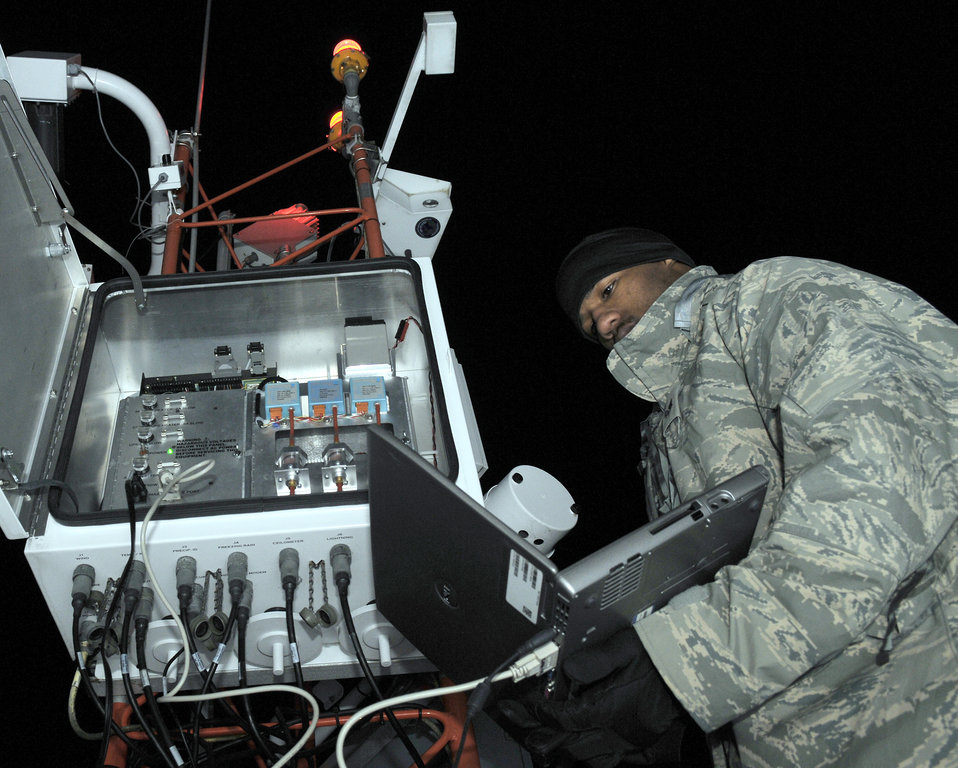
Testing 1-2-3

Senior Airman Kai Hall runs a diagnostic test on meteorological equipment Jan. 20, 2011, at Misawa Air Base, Japan. Airman Hall is an airfield systems technician assigned to the 35th Communications Squadron.